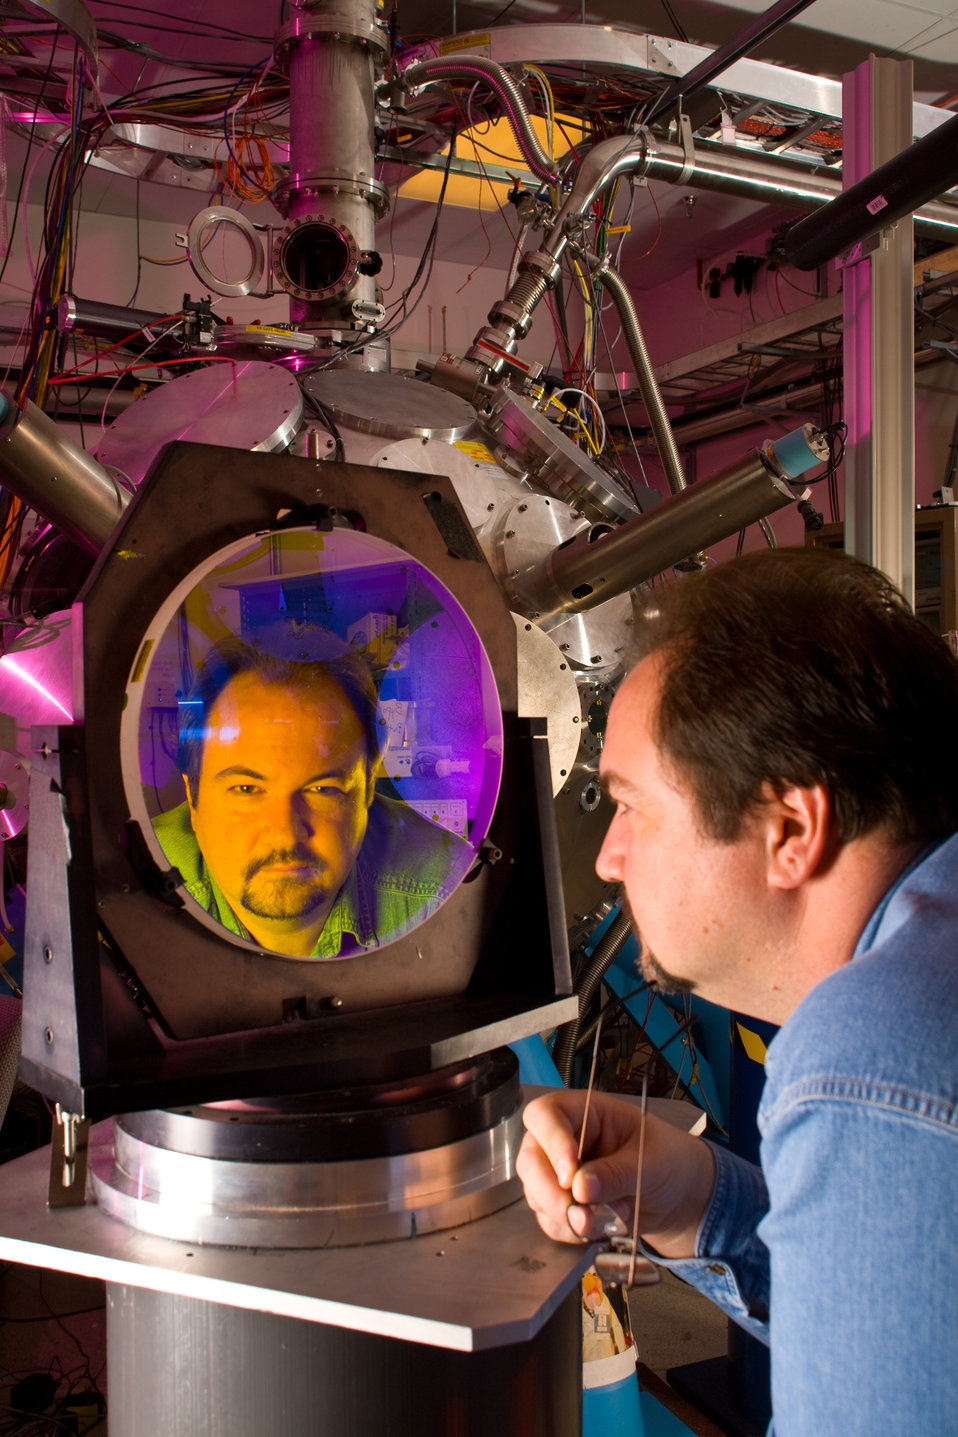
DAVID MONTGOMERY, THE DIRECTOR OF TRIDENT, THE LOS ALAMOS NATIONAL LABORATORY'S (LANL) HIGH POWER LASER FACILITY, IS REFLECTED IN THE FACILITY'S HIGH-TECH MIRRORS.